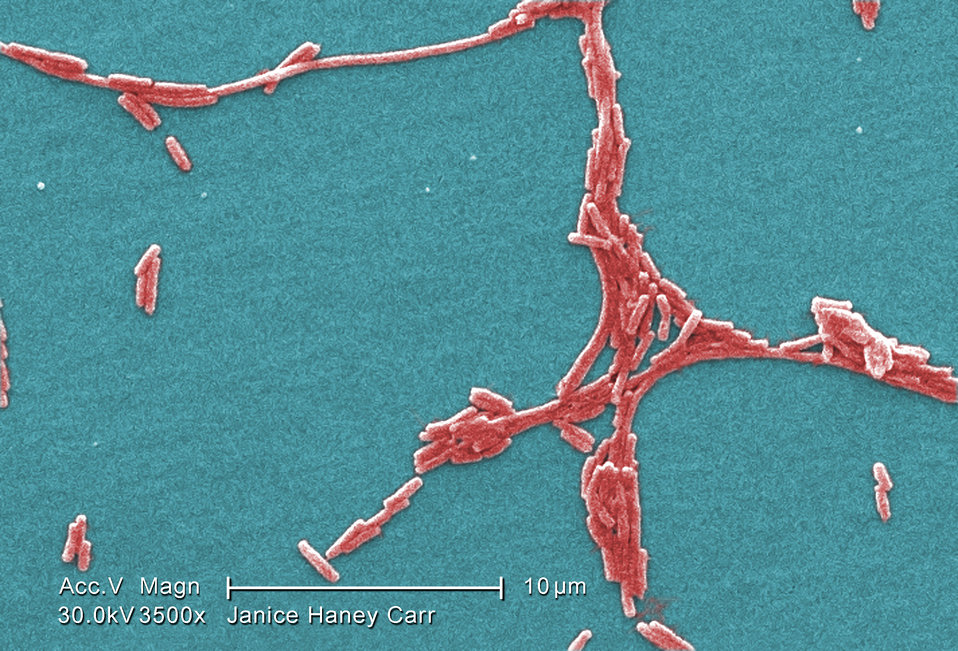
Under a moderate magnification of 3500X, this colorized scanning electron micrograph (SEM) depicted a number of Gram-negative Legionella pneumophila bacteria. Please see PHIL 11092 through 11152 for additional SEMs of these organisms, specifically PHIL 11131 for a black and white version of this image. Of particular importance, is the presence of polar flagella, and pili, or long streamers, which due to their fragile nature, in some of these views seem to be dissociated from any of the bacteria.